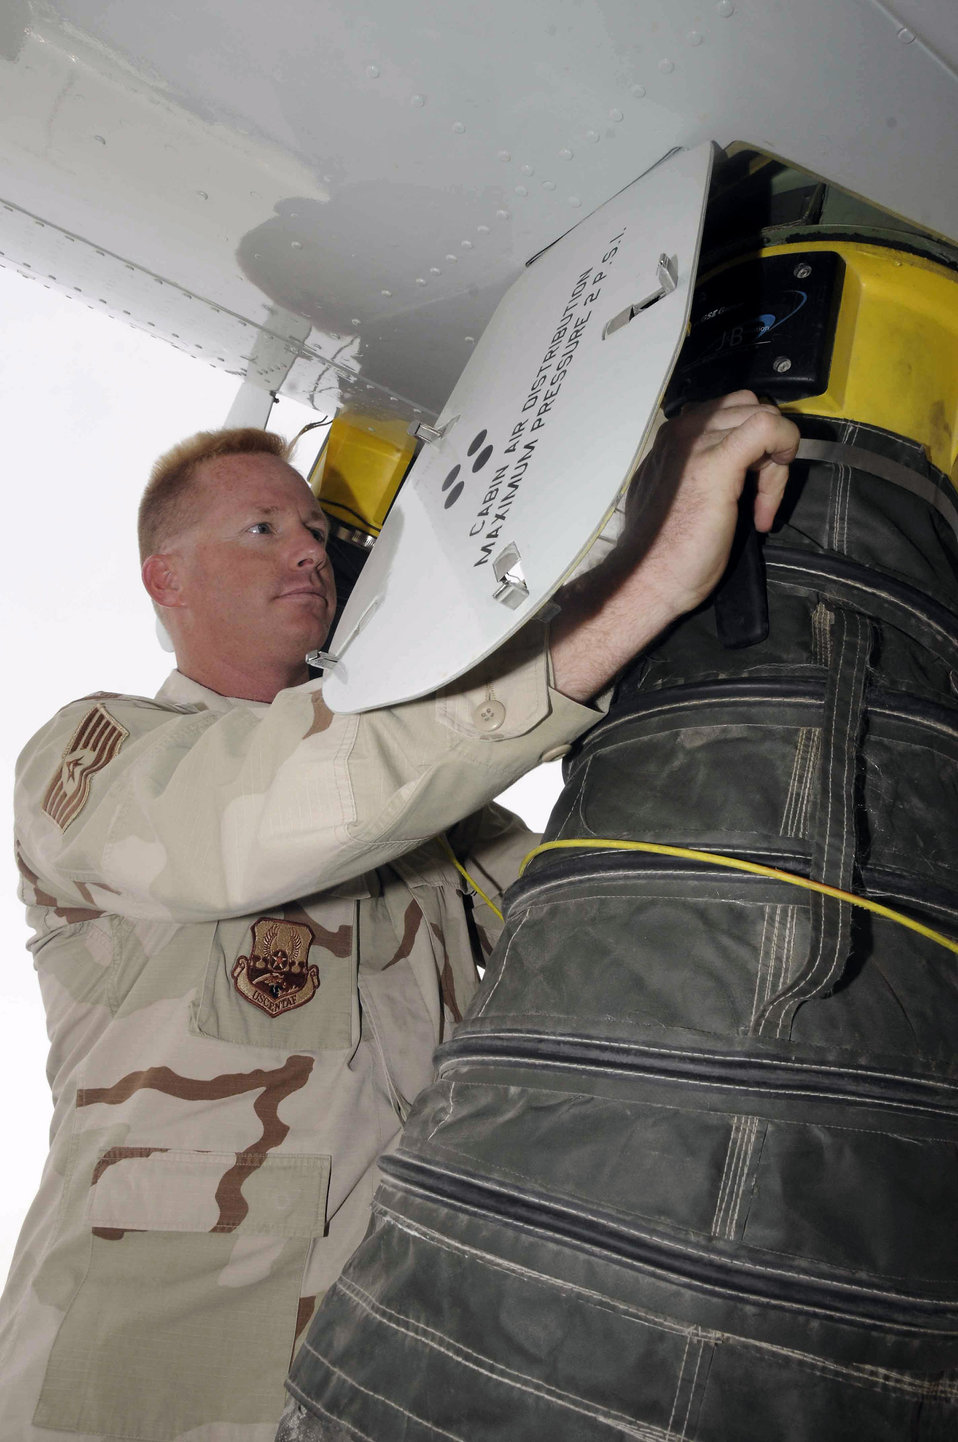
J-STARS total force cooperation helps save lives

Tech. Sgt. James Hanchett works on a Joint STARS aircraft in Southwest Asia. He and a team of about 50 air and ground specialists in more than six career fields work together with Army, Air National Guard, and Air Force Reservists to get the J-STARS mission done every day. Sergeant Hanchett is a 379th Expeditionary Aircraft Maintenance Squadron airborne surveillance radar maintainer.